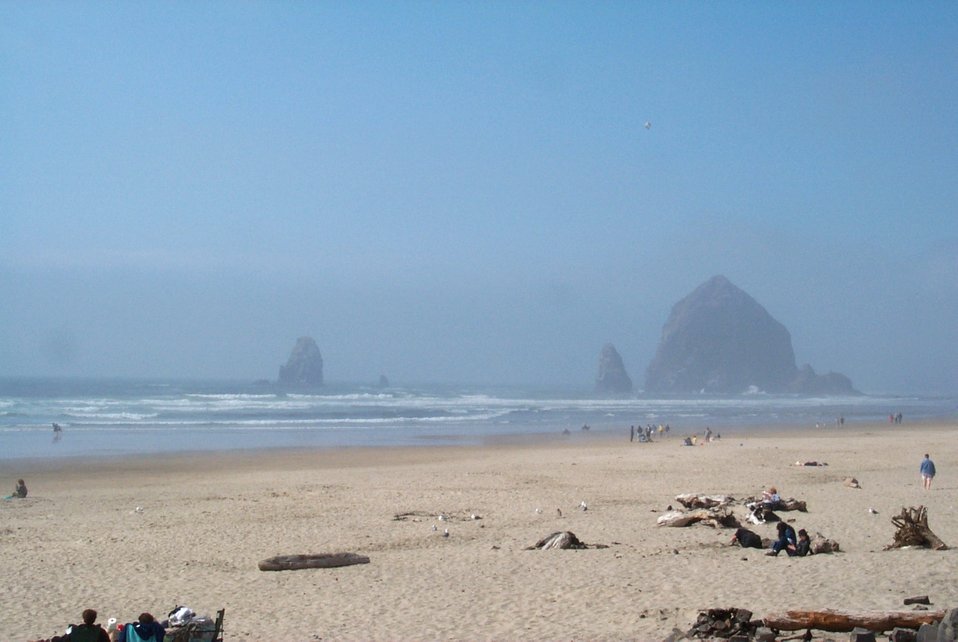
Haystack Rock at Cannon Beach on a misty day.